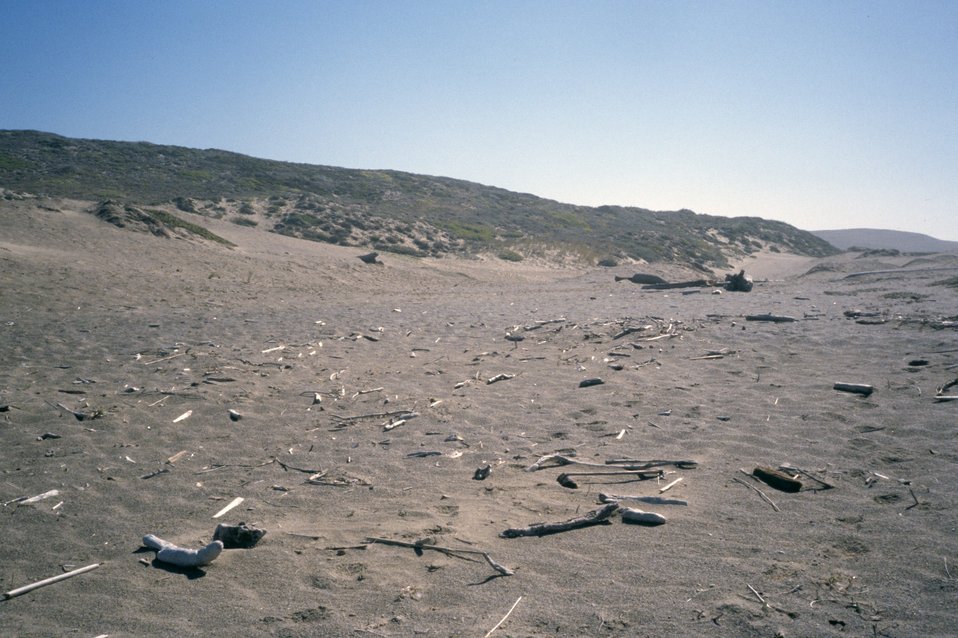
Point Reyes Great Beach